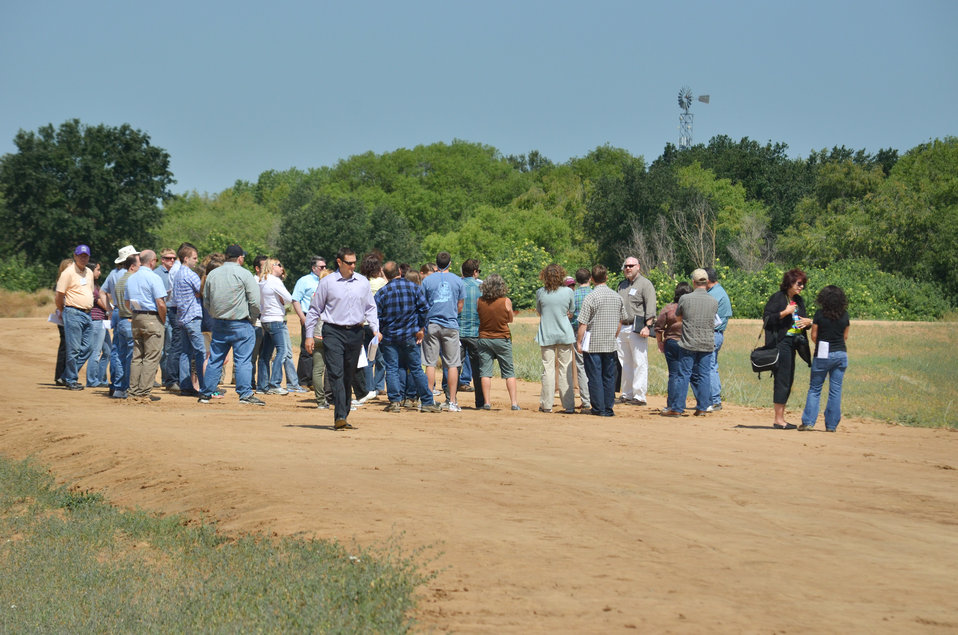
The Water Education Foundation’s Flood Management Tour stops at a setback levee near South River Road in West Sacramento, Calif., May 17, 2013. The new levee is part of the Sacramento River Bank Protection Project, a joint flood risk reduction effort between the U.S. Army Corps of Engineers Sacramento District and the California Central Valley Flood Protection Board to repair riverbank erosion along the Sacramento River and its tributaries.